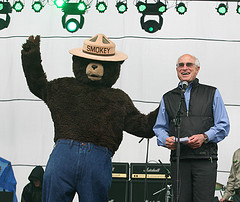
Smokey Bear and Agriculture Under Secretary for Natural Resources and Environment Harris Sherman at Earth Day 2012 on the National Mall in Washington, D.C., on Sunday, April 22, 2012.